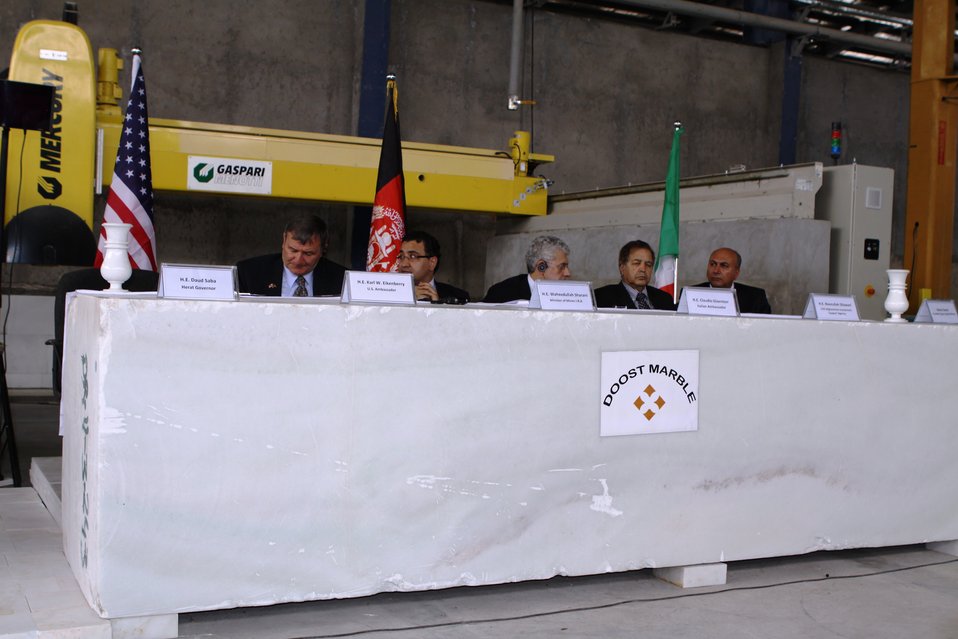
100525 Hirat Marble Conference 164